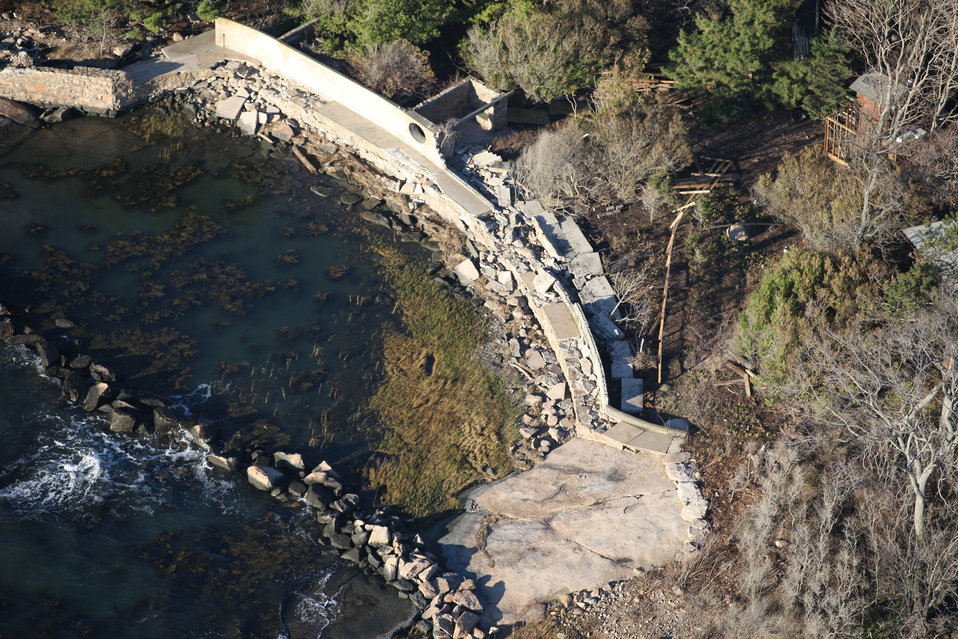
Stewart B. McKinney National Wildlife Refuge-Outer Island (CT)

An aerial view of damage from storm Sandy on Outer Island at the Stewart B. McKinney National Wildlife Refuge.